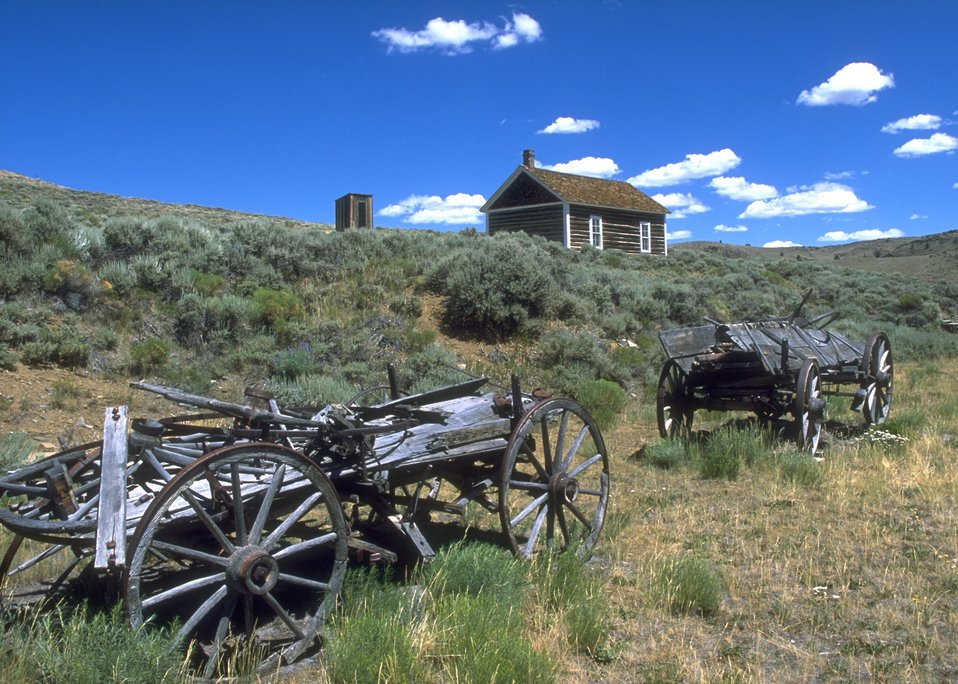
Restored buildings at South Pass City, Lander Field Office.